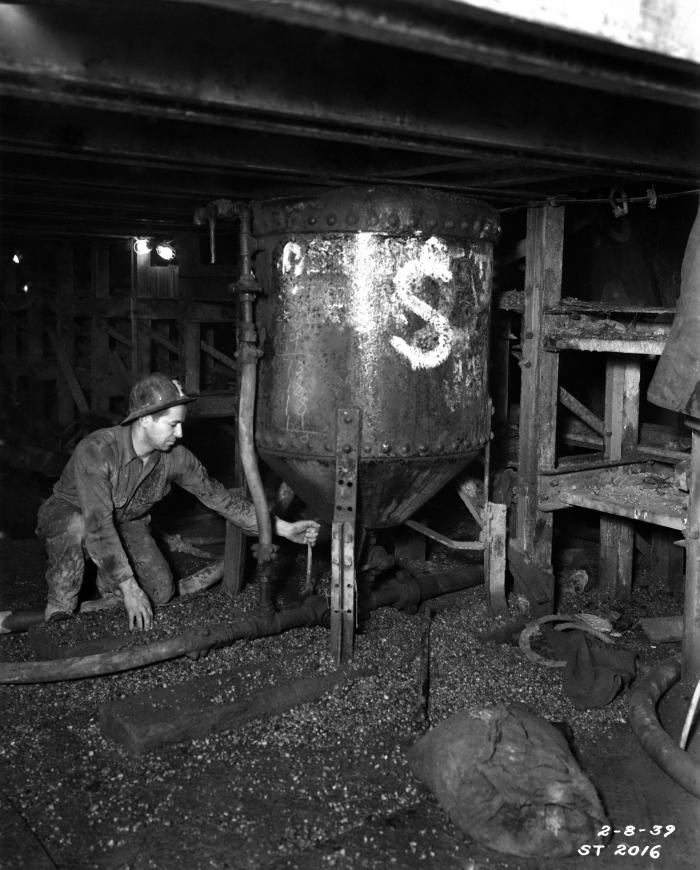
This historical image was provided by the Center for Disease Control's (CDC), National Institute for Occupational Safety and Health (NIOSH). The photograph depicted a tunnel worker inside the Queens Midtown Tunnel, in Queens, New York, while the subterranean passageway was under construction. This man was manipulating the hoses on an unidentified holding tank inside the subterranean passageway. Note that the man was wearing a protective hardhat, but wore no gloves, or filtered breathing mask, though it cannot be determined from this image if these were necessary.